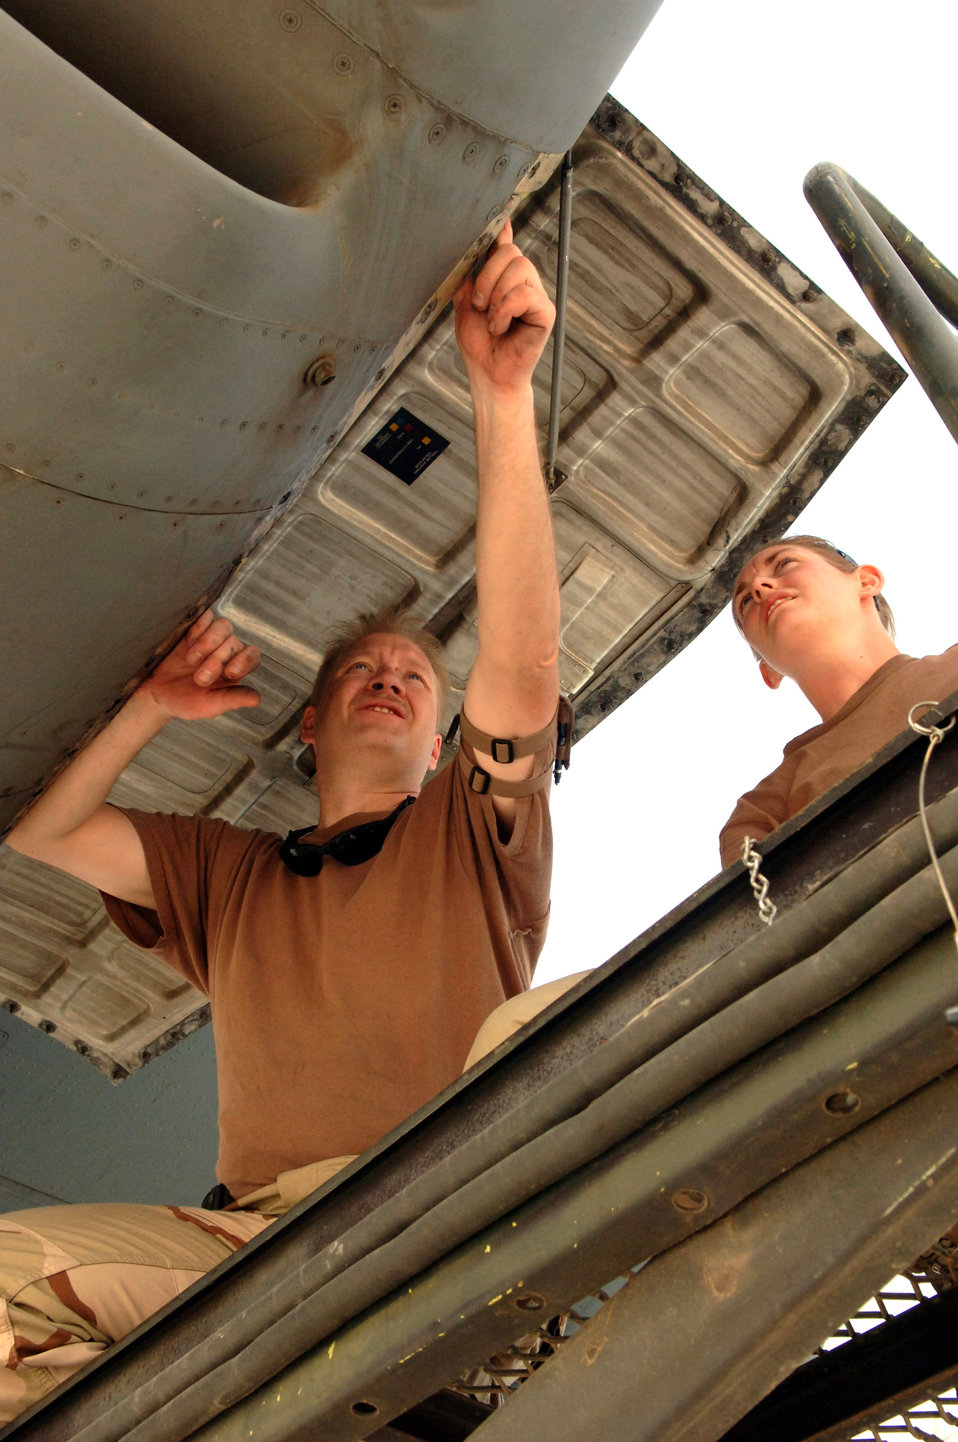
C-130Maintainers

Tech. Sgt. Scott Hopkins and Senior Airman Kayla Domlinson inspect a C-130 Hercules engine at Bagram Air Base, Afghanistan, on Wednesday, May 31, 2006. Both C-130 mechanics are from the 176th Wing at Kulis Air National Guard Base, Alaska.